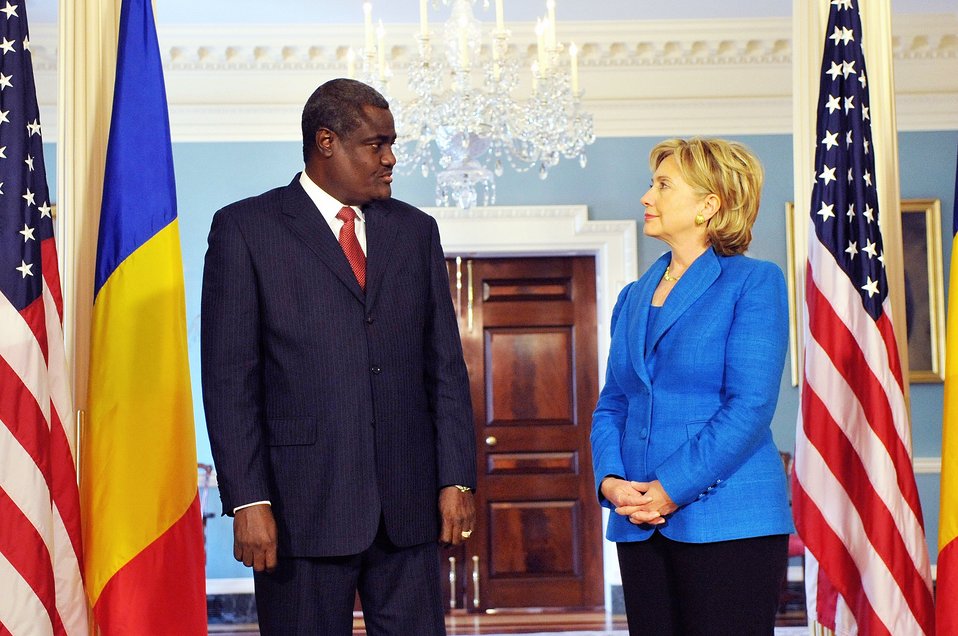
Secretary Clinton Meets With Minister of Foreign Affairs and African Integration of the Republic of Chad

U.S. Secretary of State Hillary Rodham Clinton holds a bilateral meeting with His Excellency Moussa Faki Mahamat, Minister of Foreign Affairs and African Integration of the Republic of Chad at the U.S. Department of State in Washington, DC July 15, 2009.